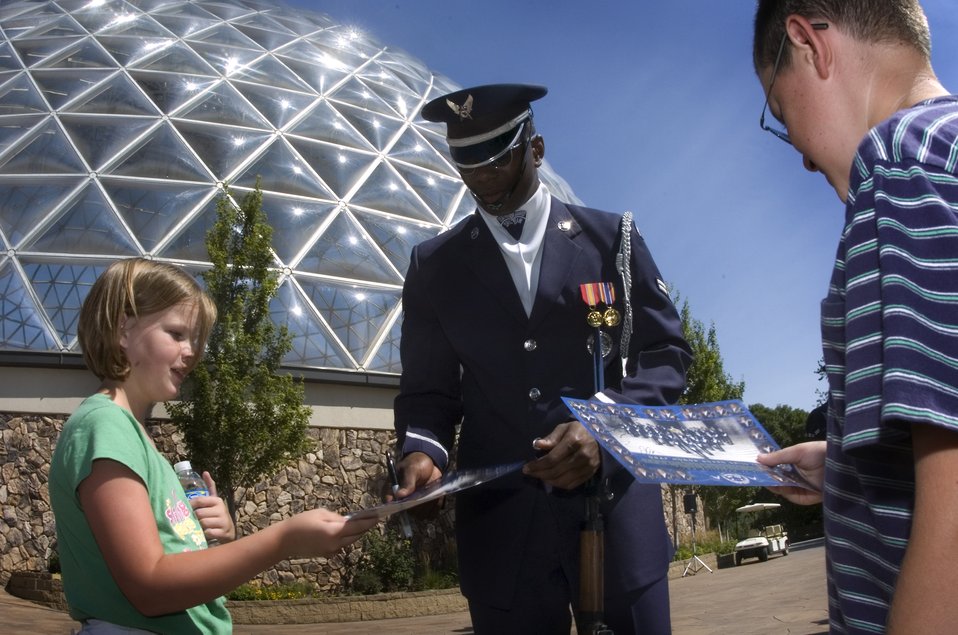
Air Force Week in the Heartland reaches out to Omaha zoo

Marissa Colmar receives an autograph from one of Air Force Honor Guard drill team members Aug. 12 at the Henry Doorly Zoo in Omaha, Neb. Zoo visitors also had the chance to see the Do Something Amazing display featuring an F-16 Fighting Falcon, a motion simulator and video simulators during Air Force Week in the Heartland.